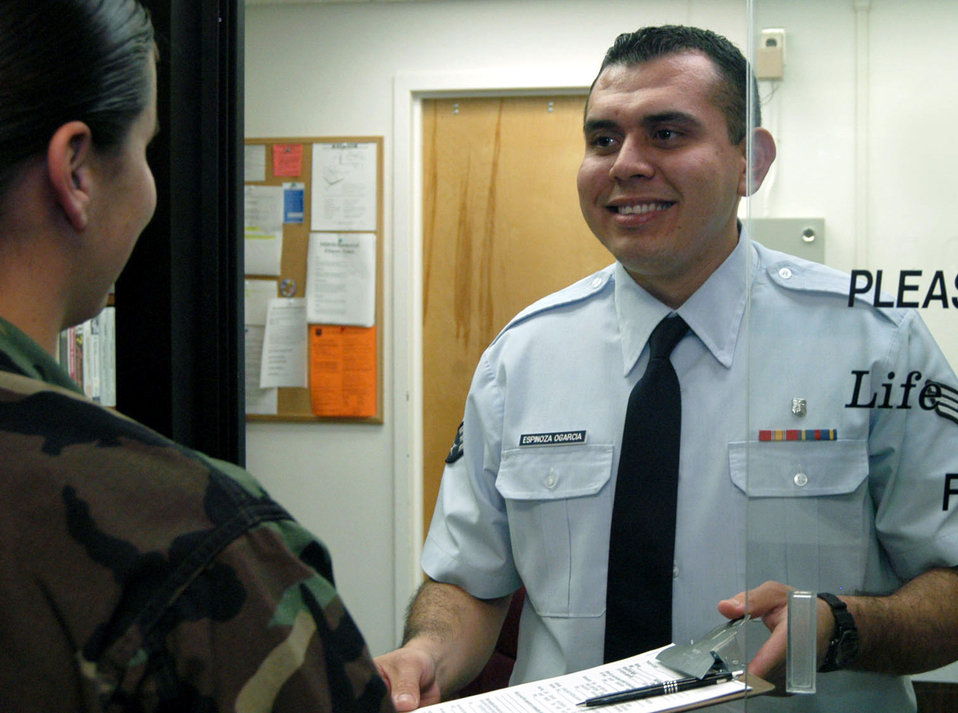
Airman's American journey spans 13 years, two countries

COLUMBUS AIR FORCE BASE, Miss. -- Senior Airman Jesus Espinoza Ogarcia greets a patient at the life-skills support center here. He is a mental-health technician with the 14th Medical Operations Squadron.